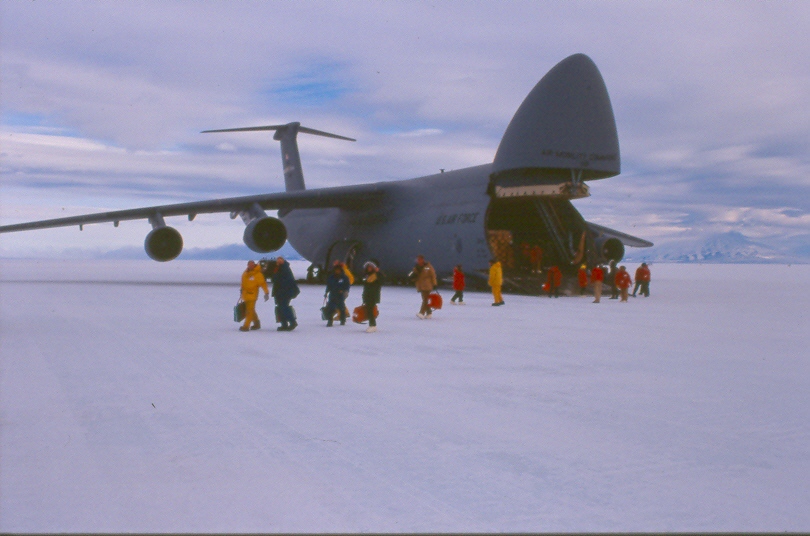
P Bond, ownwork.